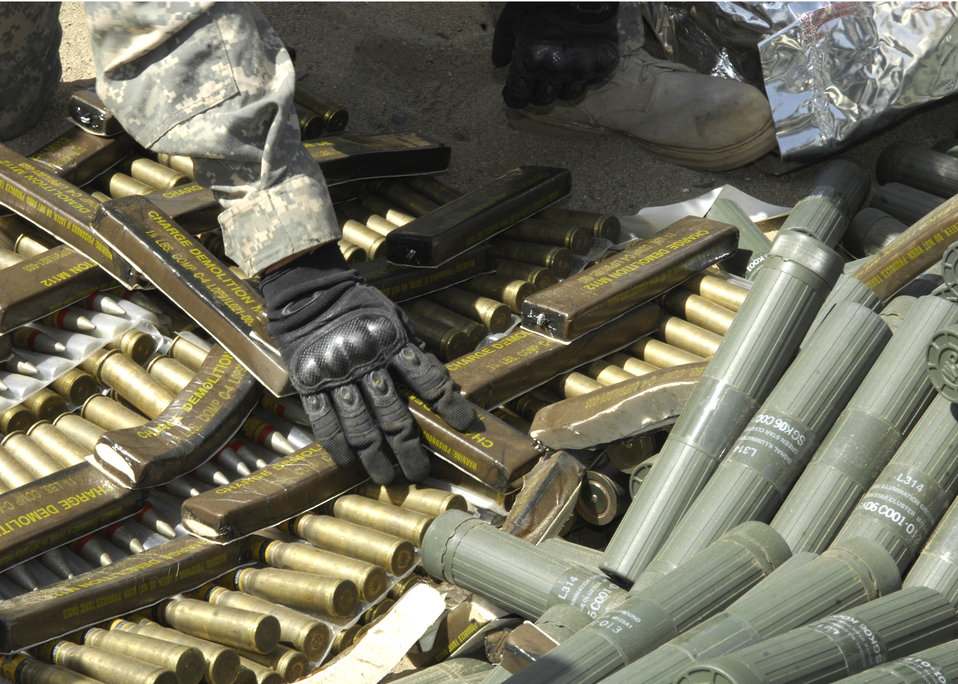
Getting ready for the big bang!

Preparing a stash of munitions for destruction, an explosive ordnance disposal Airman places C-4 explosives on top of several hundred pounds of recovered ordnance Aug. 2 on a range several miles away from Bagram Airfield, Afghanistan.